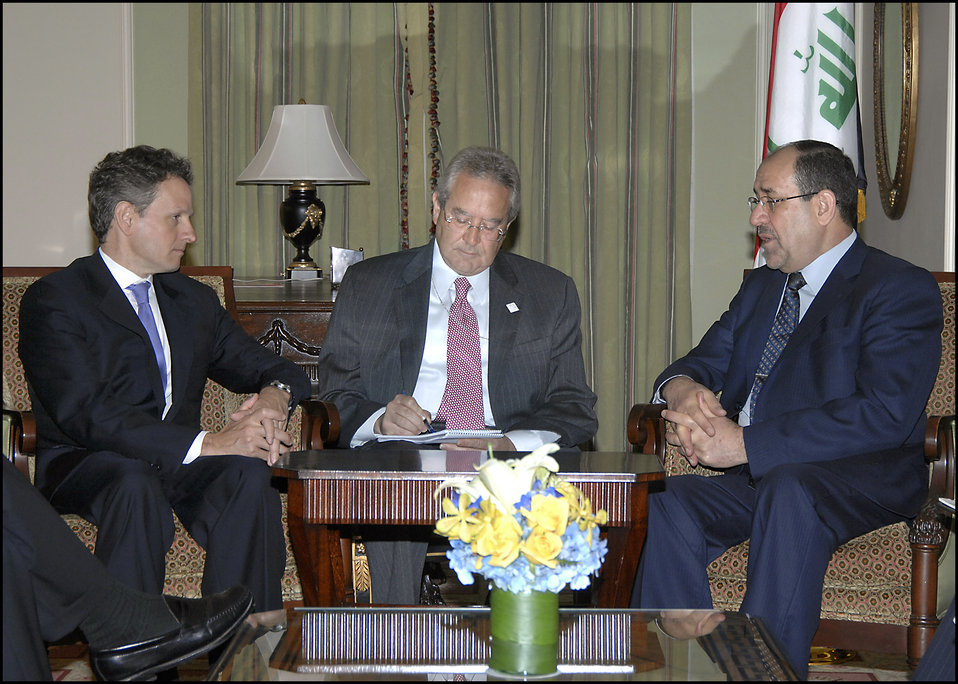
Iraqi Prime Minister Nouri al-Maliki

On July 23, 2009, Secretary Geithner met with Iraqi Prime Minister Nouri al-Maliki.